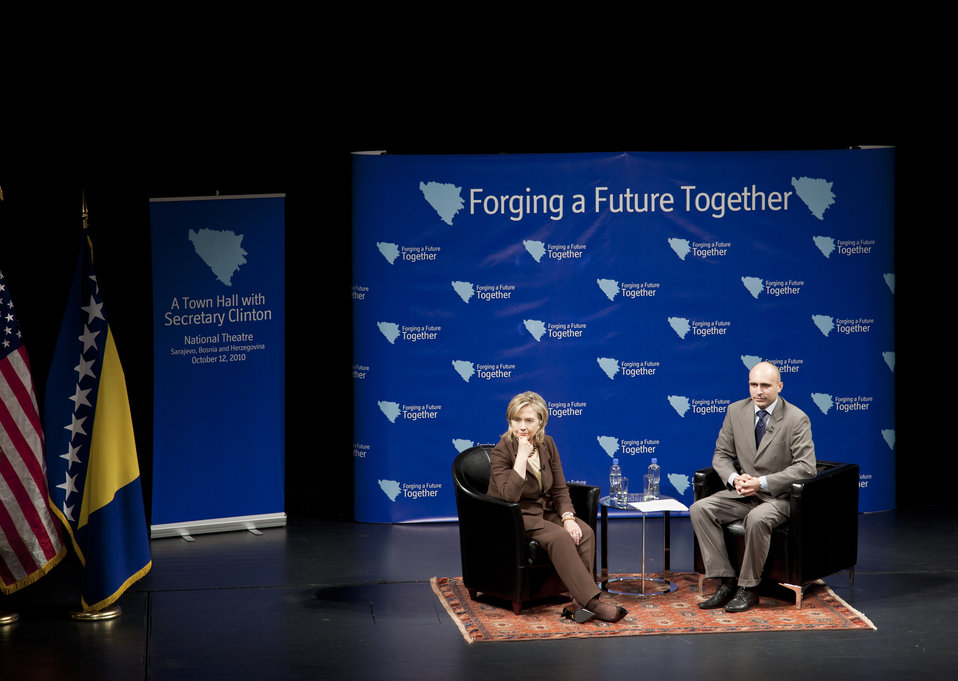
Secretary Clinton Participates in a Town Hall

U.S. Secretary of State Hillary Rodham Clinton participates in a town hall meeting with university students and civil society representatives, at the National Theater, in Sarajevo, Bosnia and Herzegovina, on October 12, 2010.